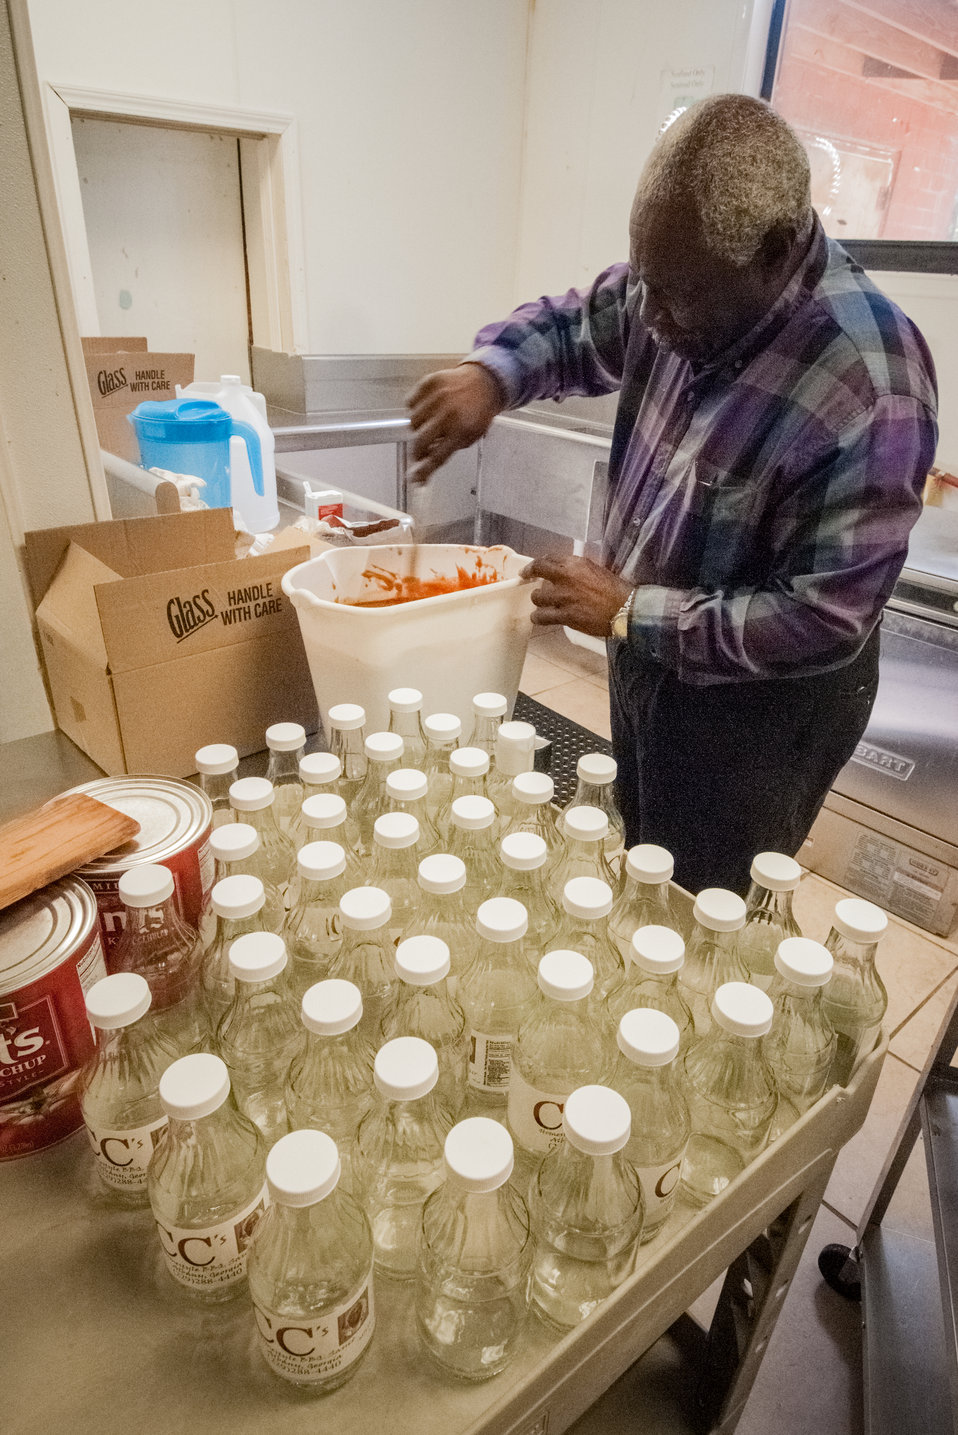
Clarence Cowart prepares his recipe for CC’s Home-style BBQ Sauce in the incubator kitchen at the East Baker Historical Society Community Center in Newton, Baker County, GA on Mar. 7, 2013. The East Baker Historical Society Community Center secured a U.S. Department of Agriculture (USDA) Rural Development (RD) Community Facilities (CF) Loan for the kitchen that enabled residents to prepare catered meals and to prepare and package food products. The USDA Strike Force Initiative has designated Baker County, GA as a Strike Force county selected to receive assistance to relieve persistent poverty in historically high-poverty counties.